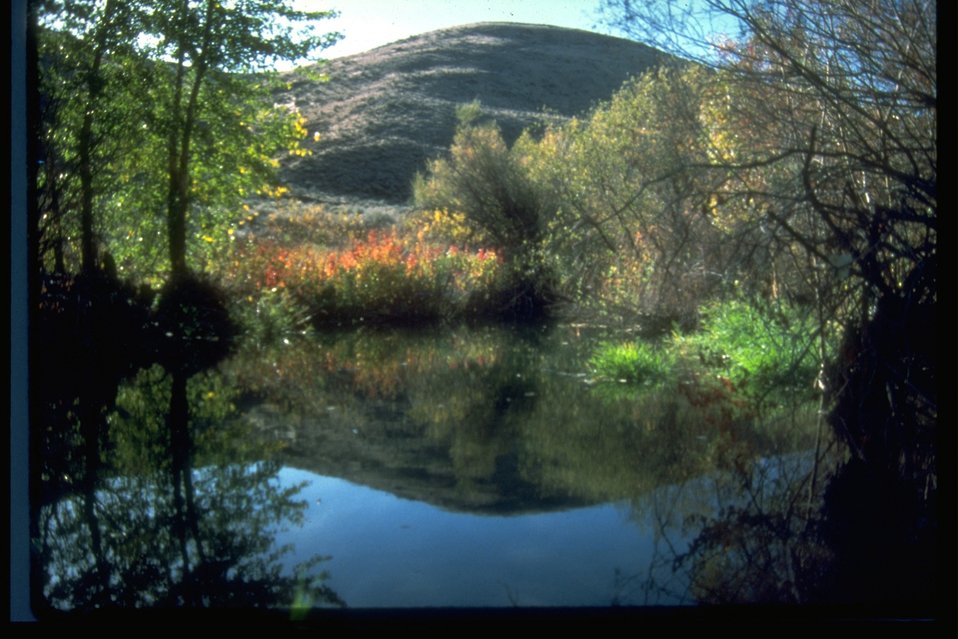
Doughlas Creek area in Douglas County, Washington.